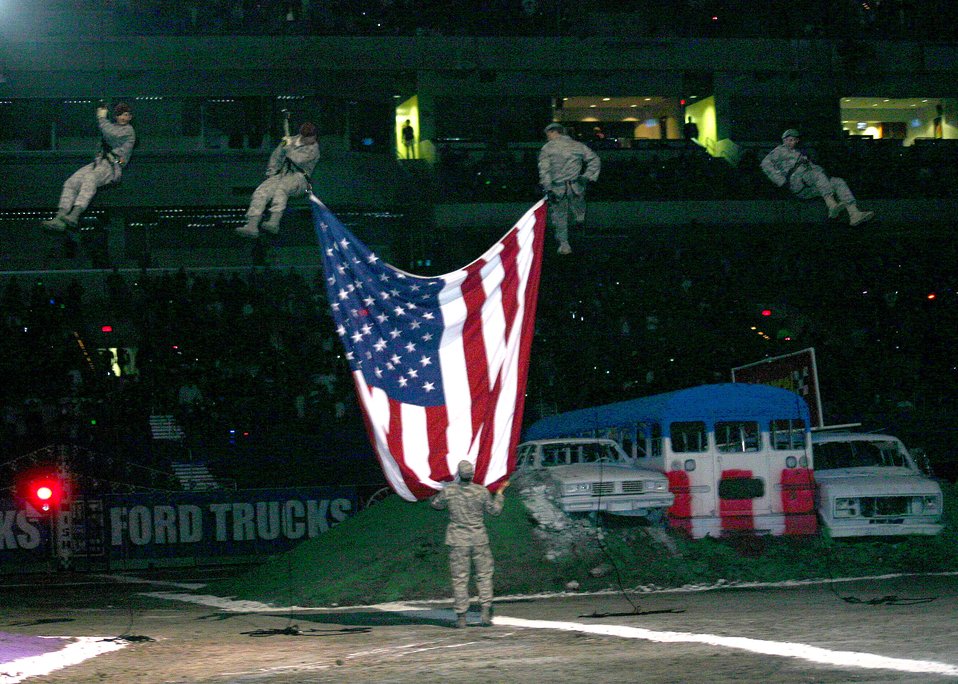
Afterburner flies high in Monster Jam

The American flag is unfurled as an Air Force special operations team from nearby Lackland Air Force Base, Texas, rappels from the rafters of the Alamodome Jan. 10 during 2009 Monster Jam in San Antonio.